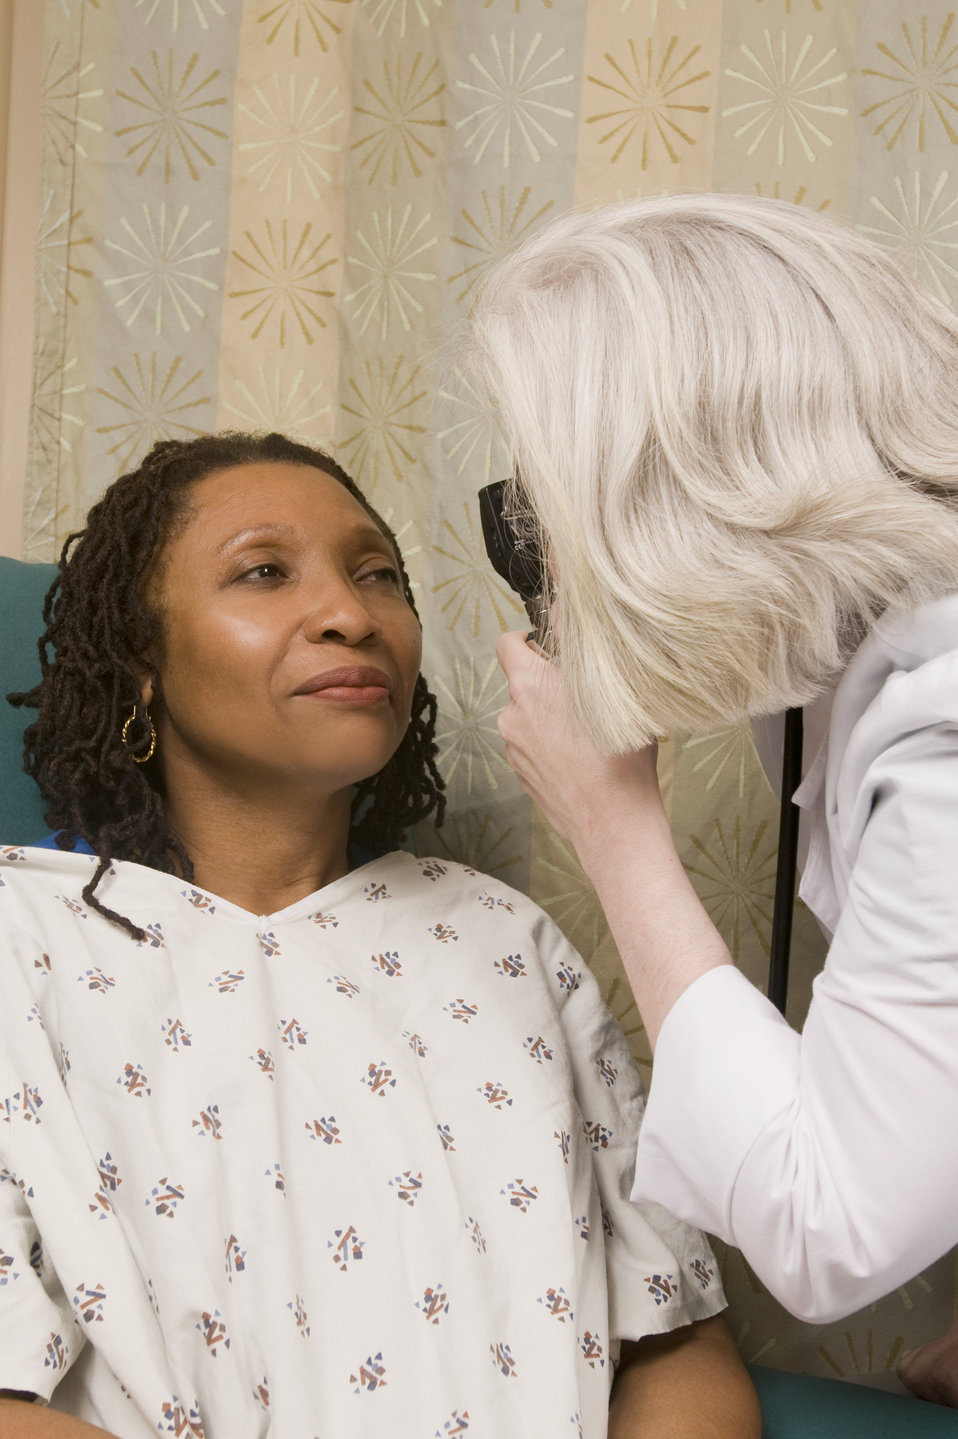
This seated female patient was in the process of receiving an eye examination from a female physician, who was using a hand-held ophthalmoscope to see into her left eye.